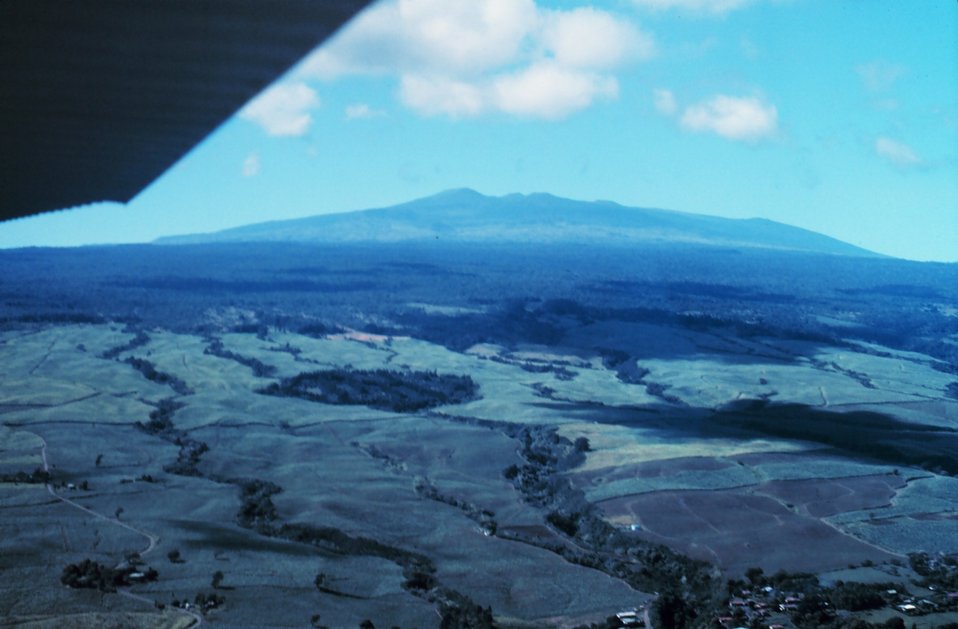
Mauna Loa from the air